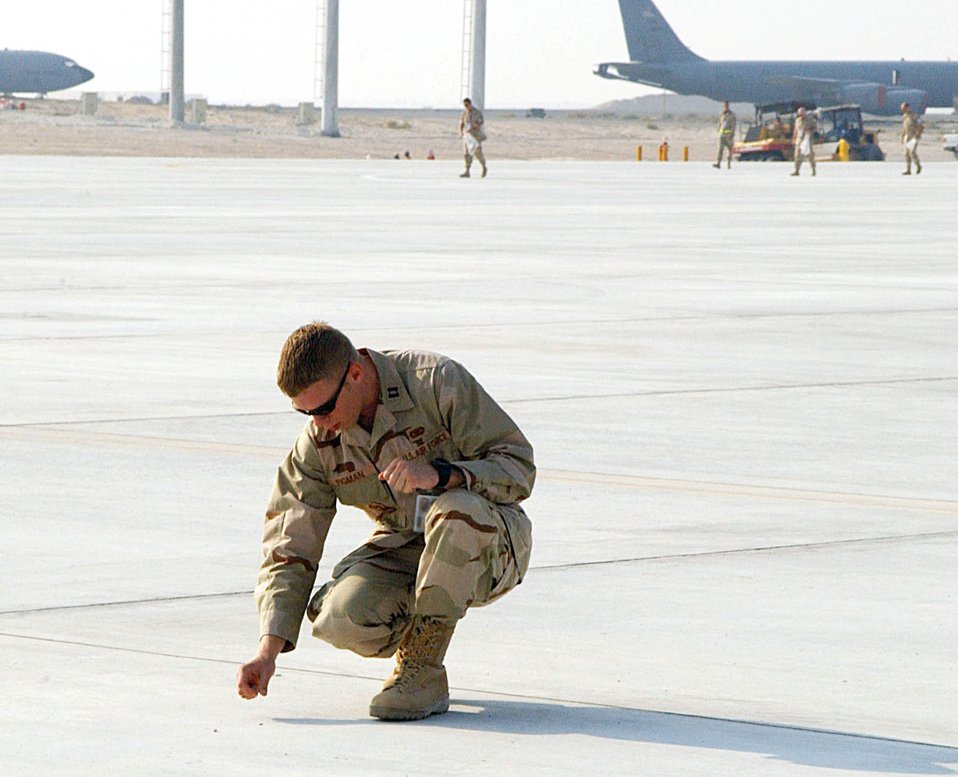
New tanker ramp opens at deployed base

SOUTHWEST ASIA (AFPN) -- Capt. John Pigman finds and removes a piece of debris from the flightline area of this desert air base's new tanker ramp Oct. 22. Captain Pigman was one of more than 200 380th Air Expeditionary Wing volunteers who helped perform this final safety check prior to the official opening of the new ramp. Captain Pigman is a member of the security forces squadron here.